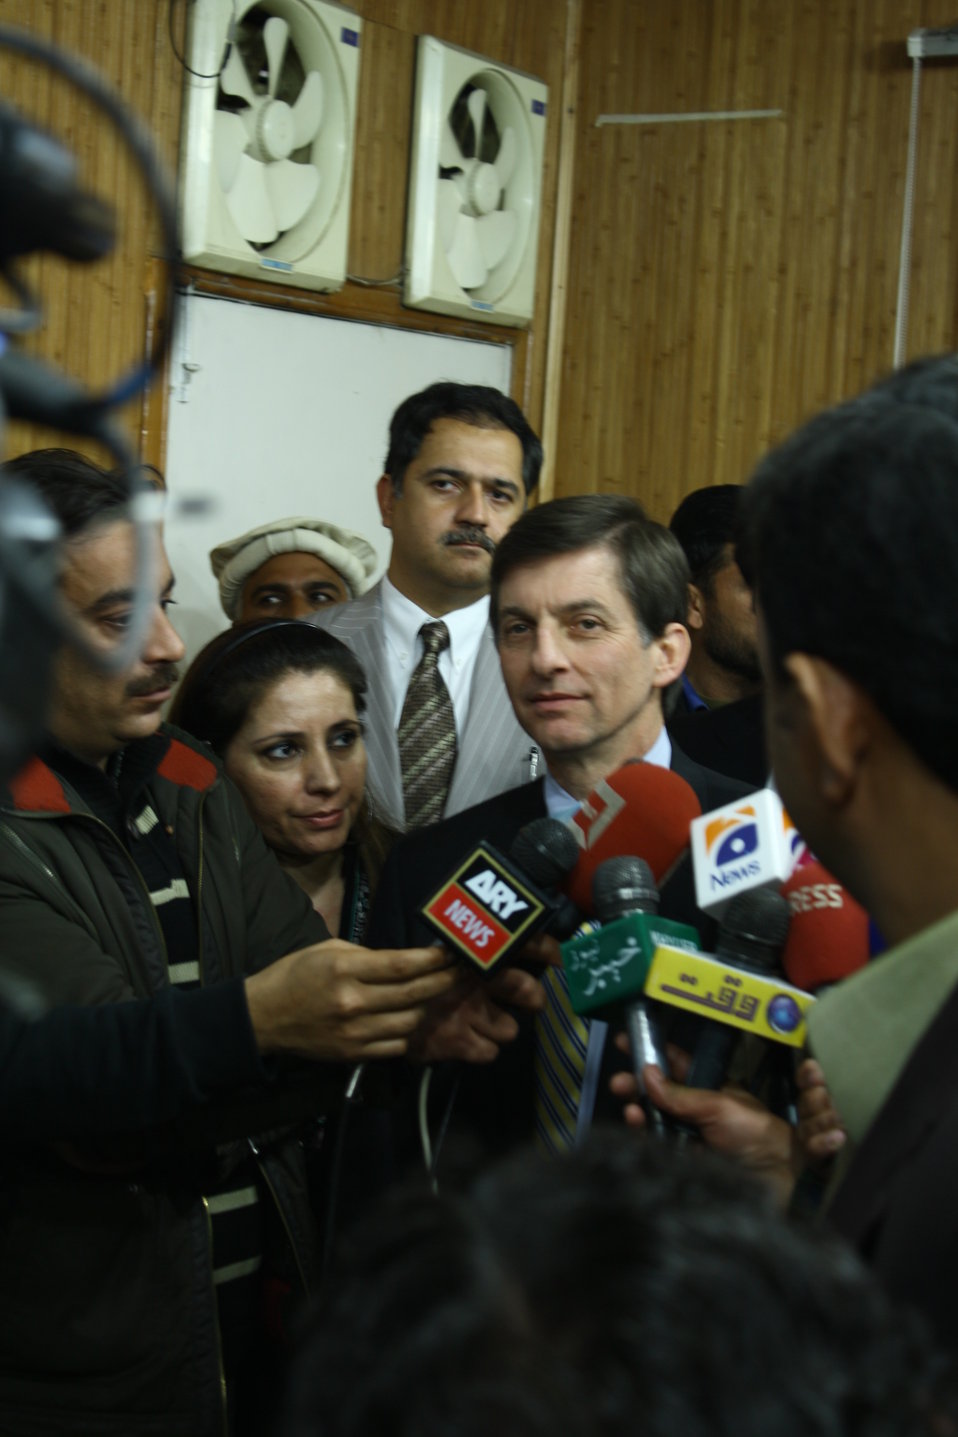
USAID Joins Hands with KPPCI to Develop a Roadmap to Promote Tourism and Industry in KPK - 3

USAID Mission Director Dr. Andrew B. Sisson addresses the media at the Launching Ceremony for the Vision Documents on Industry & Tourism Sectors of Khyber Pakhtunkhwa Province.